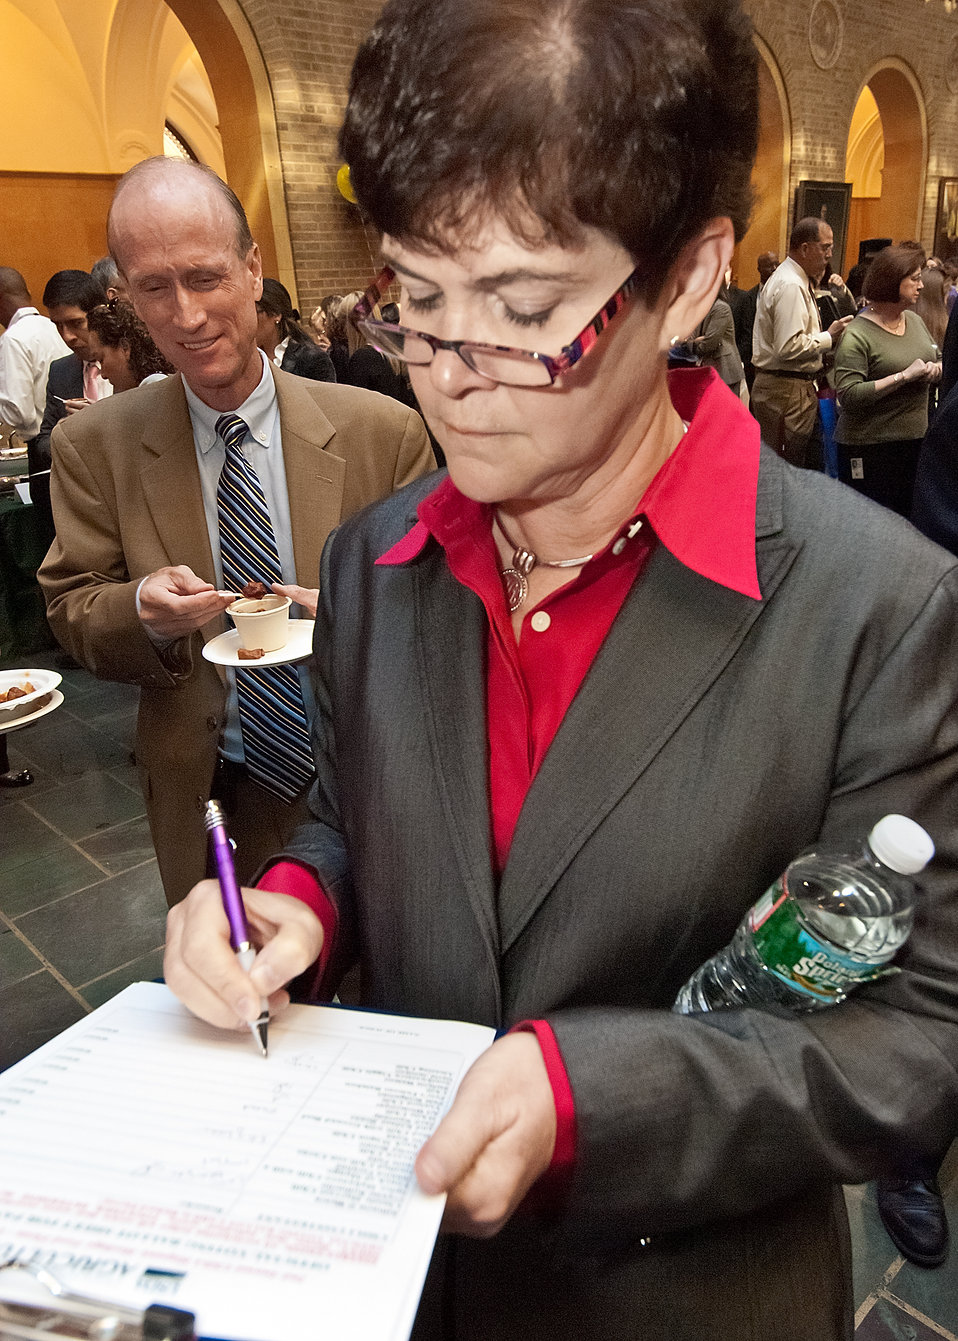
Krista Hardin, Chief of Staff judges a chili recipe prepared for the Second Annual U. S. Department of Agriculture Chili Challenge Contest to celebrate Hispanic Heritage Month at USDA in Washington, DC, on Thursday, October 6, 2011. Employee chef volunteers along with Celebrity chefs used chili’s in delicious recipes to celebrate Hispanic cuisine. USDA’s traditional Chili Challenge trophy will be awarded to this year’s best-tasting chili. Other judges for the challenge along with Hardin were Chef Lemin, Chef Matamoros, Chef Toni Tipton-Martin and Ed Avalos, Undersecretary, Marketing and Regulatory Programs.